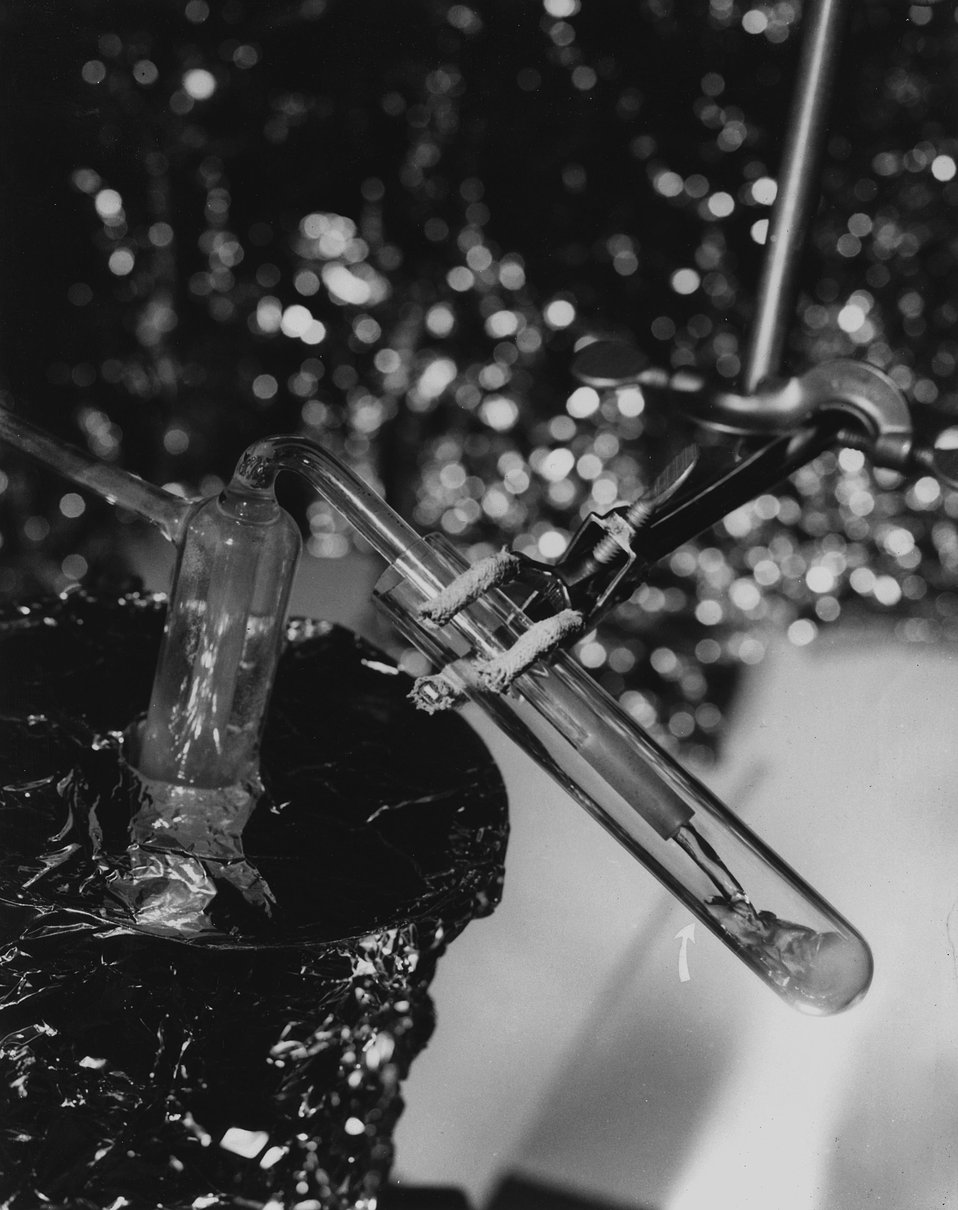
The first photograph of a typical fuel Molten Salt Reactor Experiment (MSRE). Fuel flowing at approximately 700 degrees C. (1,292 degrees F.). c. 1970